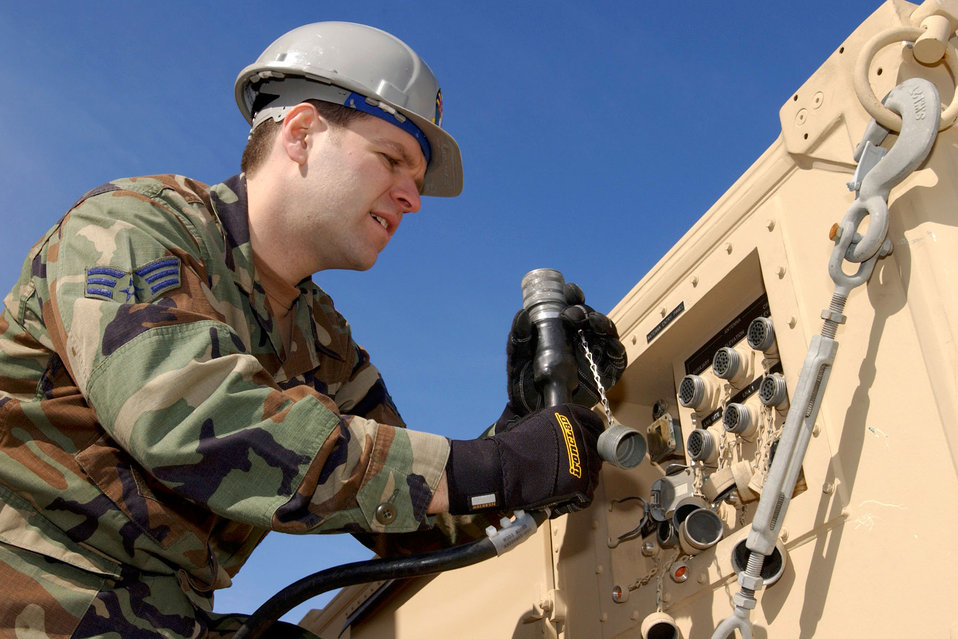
Satellite setup

MCENTIRE AIR NATIONAL GUARD STATION, S.C. -- Senior Airman Stephen Aun helps set up a satellite antenna. Airman Aun is assigned to the 240th Combat Communications Squadron here.